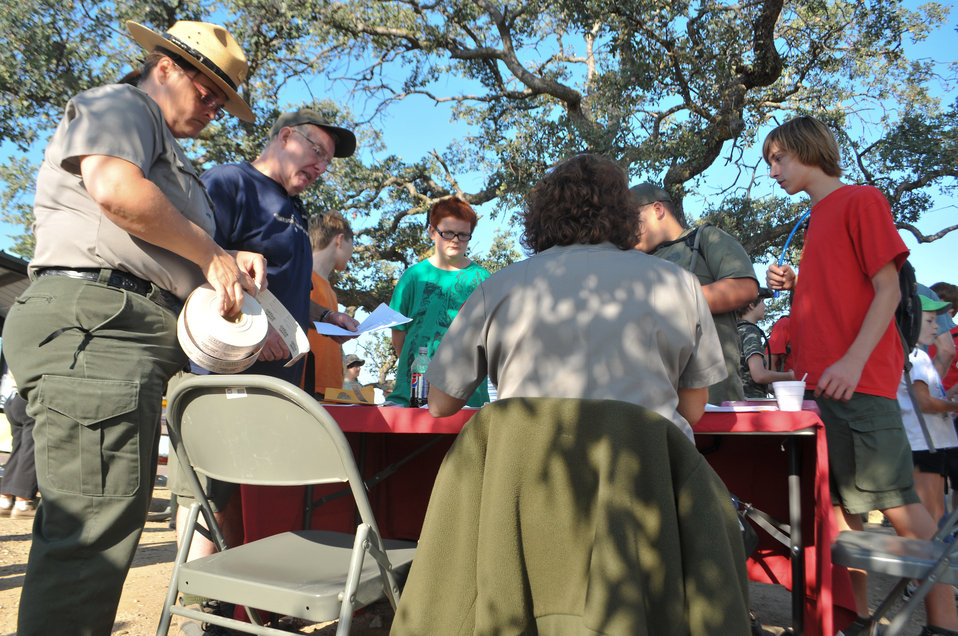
HENSLEY LAKE, Calif. (Sept. 25, 2010) – Eastman Lake senior park ranger Carrie Richardson (left) and park technician Reba Schuman (seated) check-in National Public Lands Day volunteers here Sept. 25. More than 110 volunteers helped Hensley staff remove litter, repair trail erosion, clean the swimming beach and paint and clean signs throughout the park. The Corps’ Eastman and Hensley Lakes are just miles apart, and take turns hosting National Public Lands Day events each year.